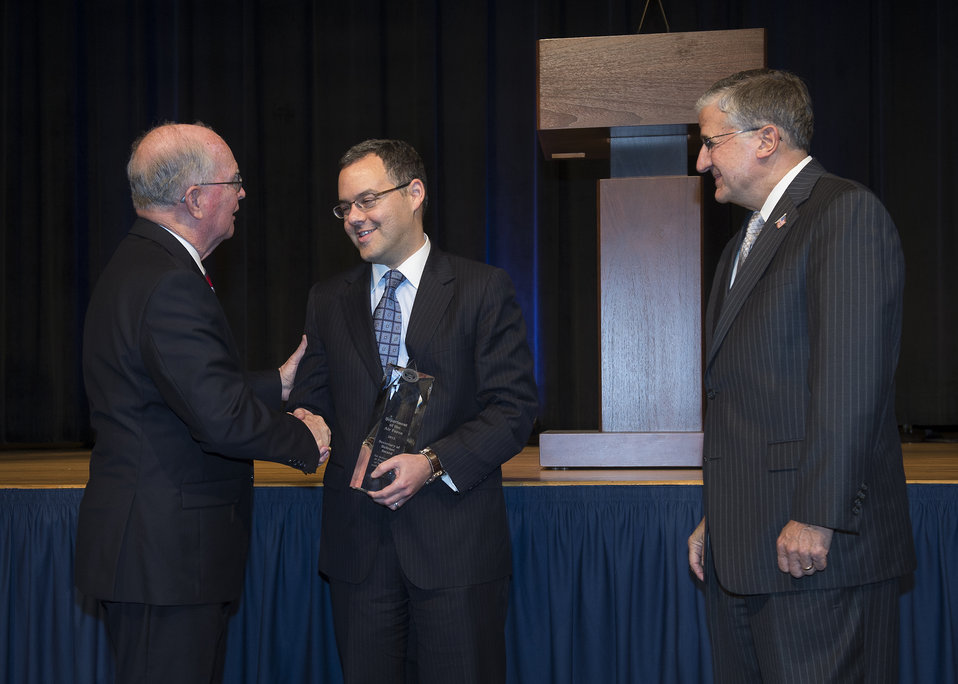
Air Force awarded for best in military

Daniel Ginsberg, the Air Force assistant secretary for manpower and Reserve affairs, accepts the Secretary of Defense Award for Achievements in Employment of Individuals with Disabilities, on behalf of the Air Force, from Frederick E. Vollrath, during the 32nd Annual Department of Defense Disability Awards Ceremony held in the Pentagon, Washington, D.C., on Dec. 04, 2012. Also pictured is Bob Corsi, Air Force assistant deputy chief of staff for Manpower, Personnel and Services. Vollrath currently performs the duties of assistant secretary of defense for readiness and force management.